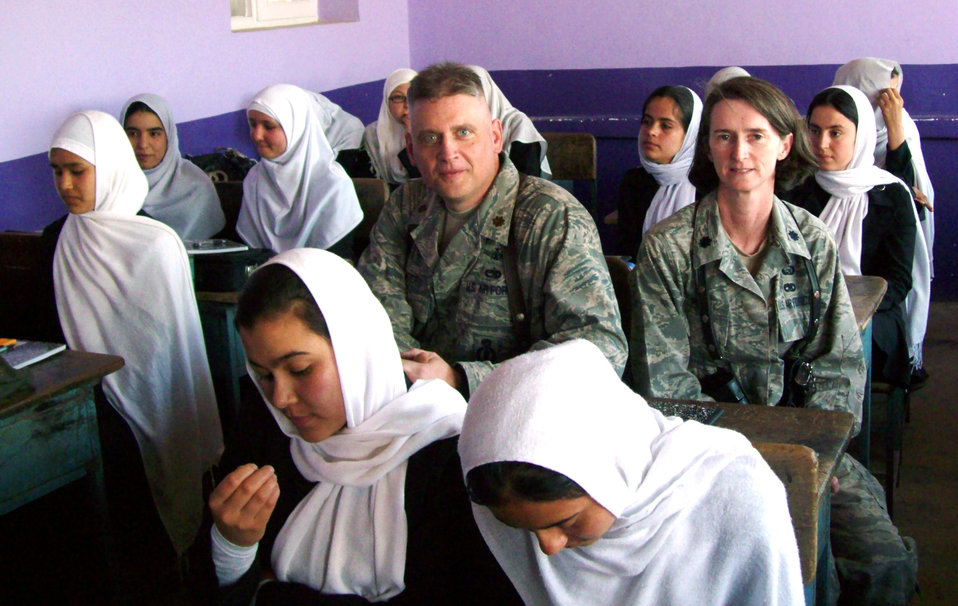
Airman contributes to advancement of Afghan women

Lt. Col. Lisa Pike contributed to standing up the first Afghan Female Officer Candidate Course during her recent deployment to Afghanistan. Colonel Pike is assigned to the Air Force Manpower, Services and Personnel Directorate.